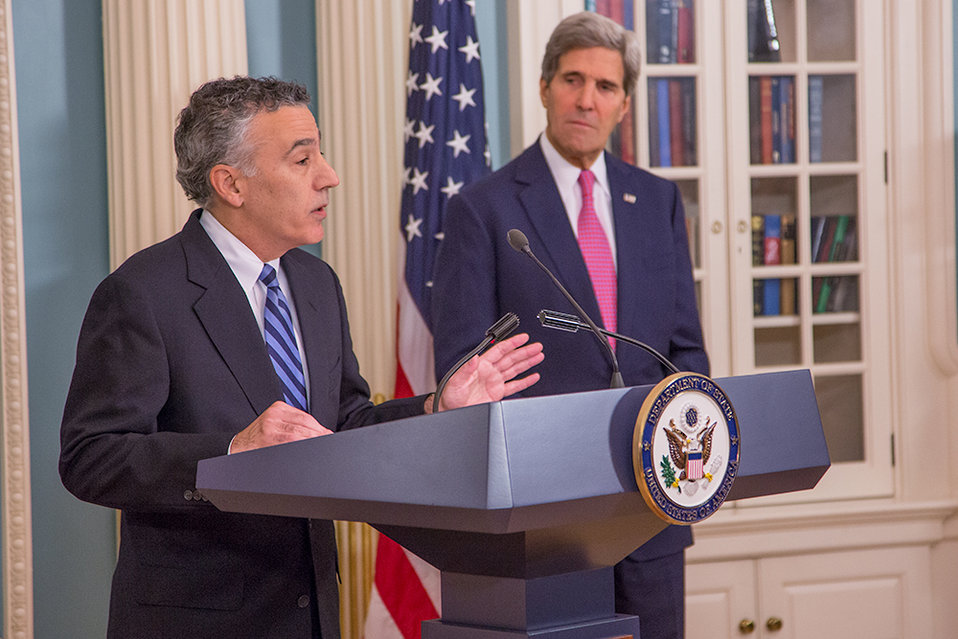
Ambassador Goldberg Delivers Remarks at his Swearing-In Ceremony

U.S. Ambassador to the Philippines Philip Goldberg, flanked by U.S. Secretary of State John Kerry, delivers remarks at his swearing-in ceremony hosted by the Secretary at the U.S. Department of State in Washington, D.C., on November 21, 2013.